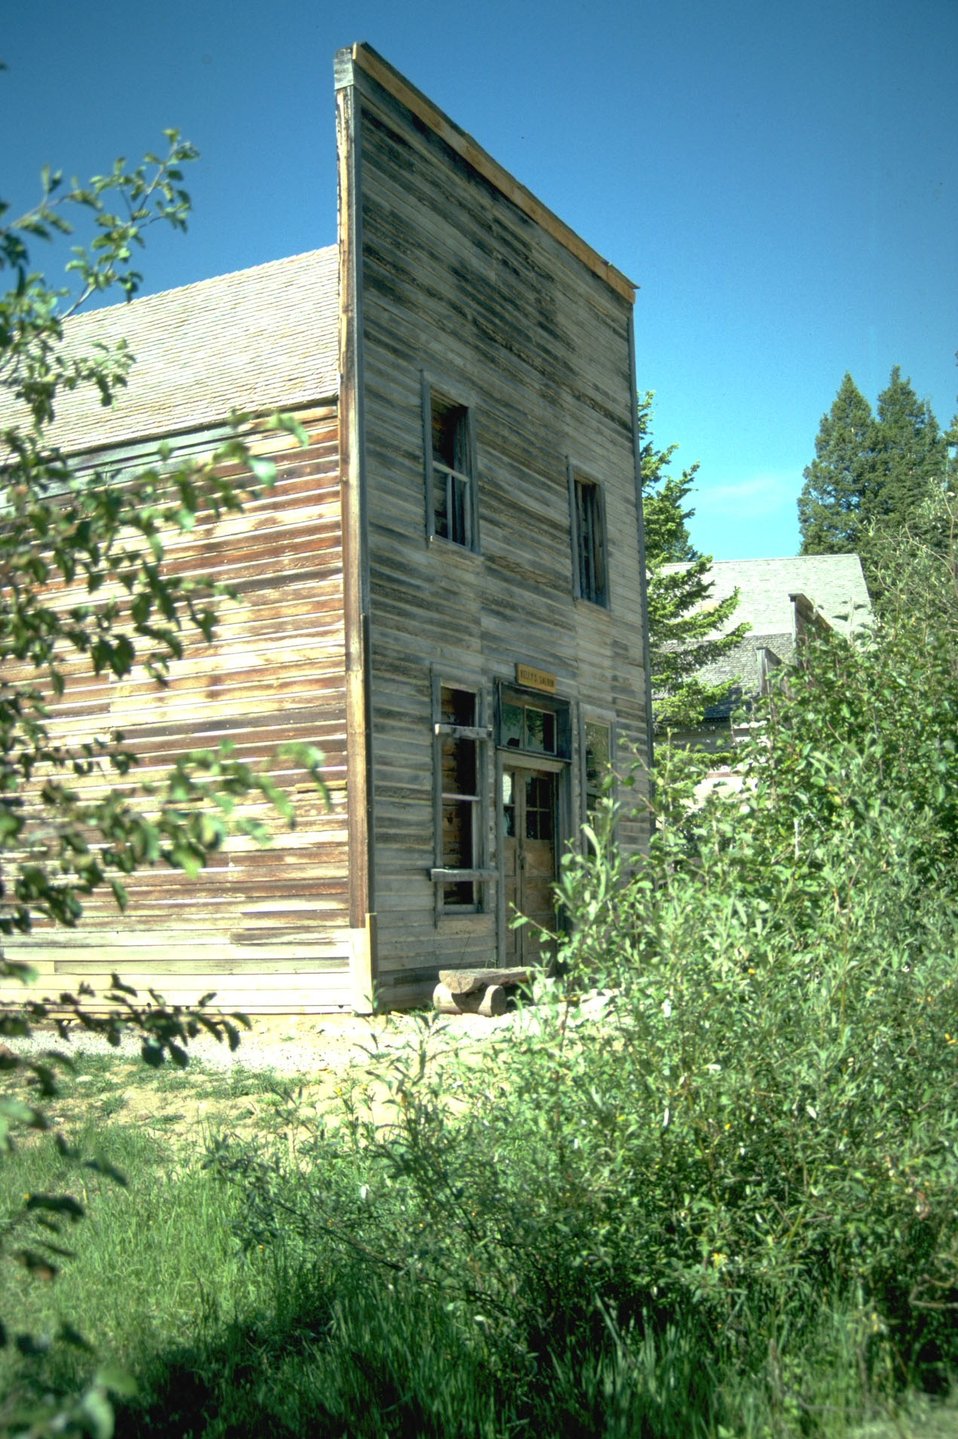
Davies store in Garnet Ghost Town